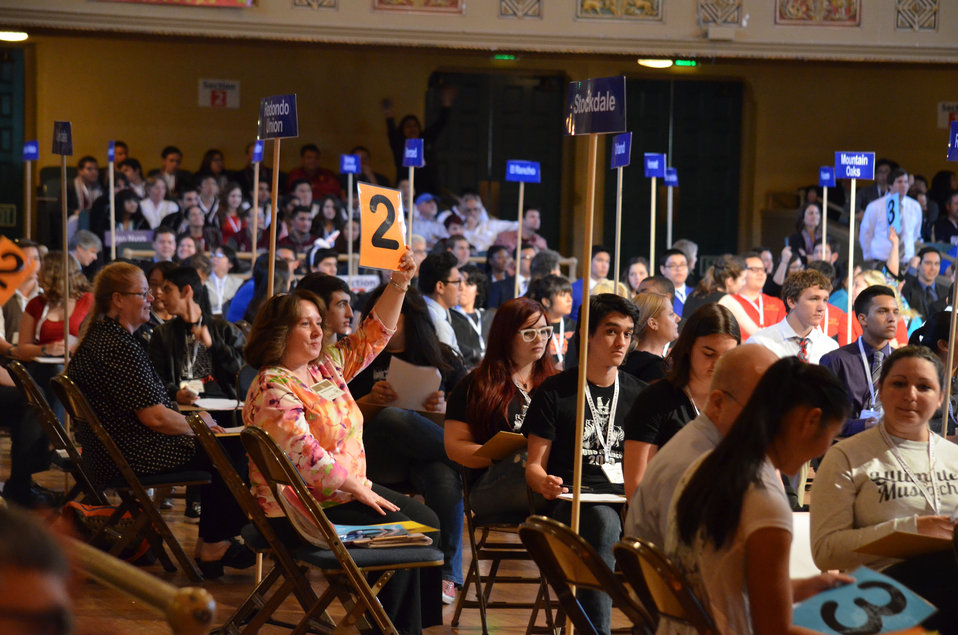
Kathy Stephens' team showing two correct answers

Kathy Stephens, an interior designer with the U.S. Army Corps of Engineers Sacramento District, flashes a score for the judges during the California Academic Decathlon, March 22, 2014 at the Memorial Auditorium in Sacramento, Calif. A total of six district employees volunteered their time during the three-day event, which determines who represents California during the national decathlon this April in Honolulu.